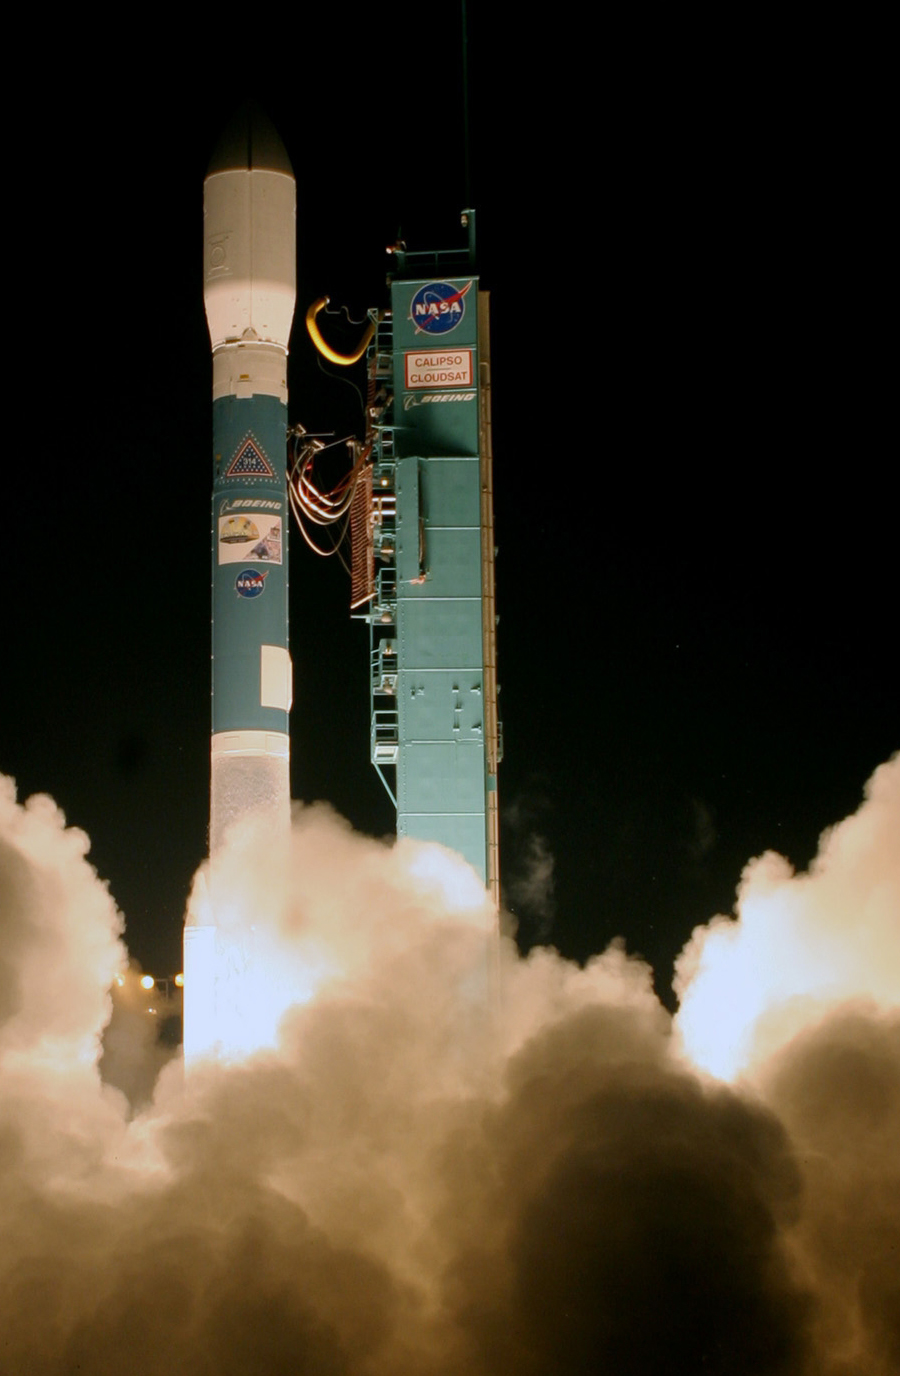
CloudSat/Calipso launch

NASA's CloudSat and CALIPSO - Cloud-Aerosol Lidar and Infrared Pathfinder Satellite Observations - launched April 28 atop a Delta II rocket. The 22nd Space Operations Squadron at Schriever Air Force Base provided Air Force Satellite Control Network support for the mission.